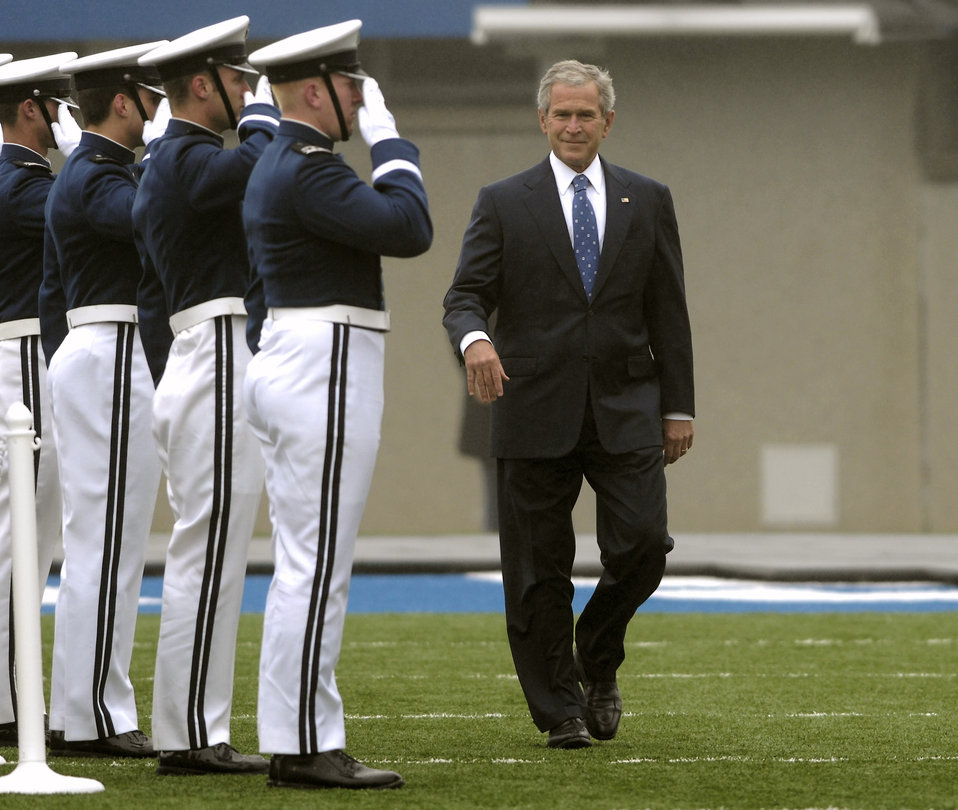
Academy Class of 2008 graduates

President George W. Bush arrives at the U.S. Air Force Academy's Falcon Stadium prior to the Academy Class of 2008 Graduation Ceremony. The president served as the commencement speaker for the class of 1,012 newly-graduated second lieutenants.